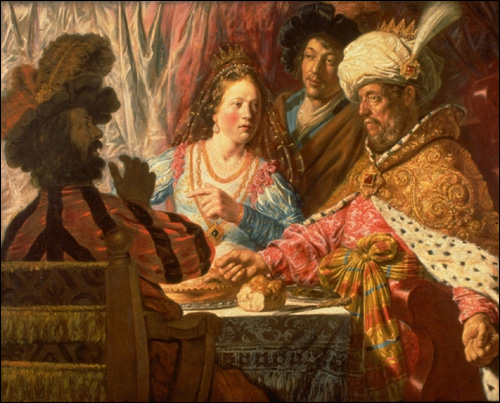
012 lrg